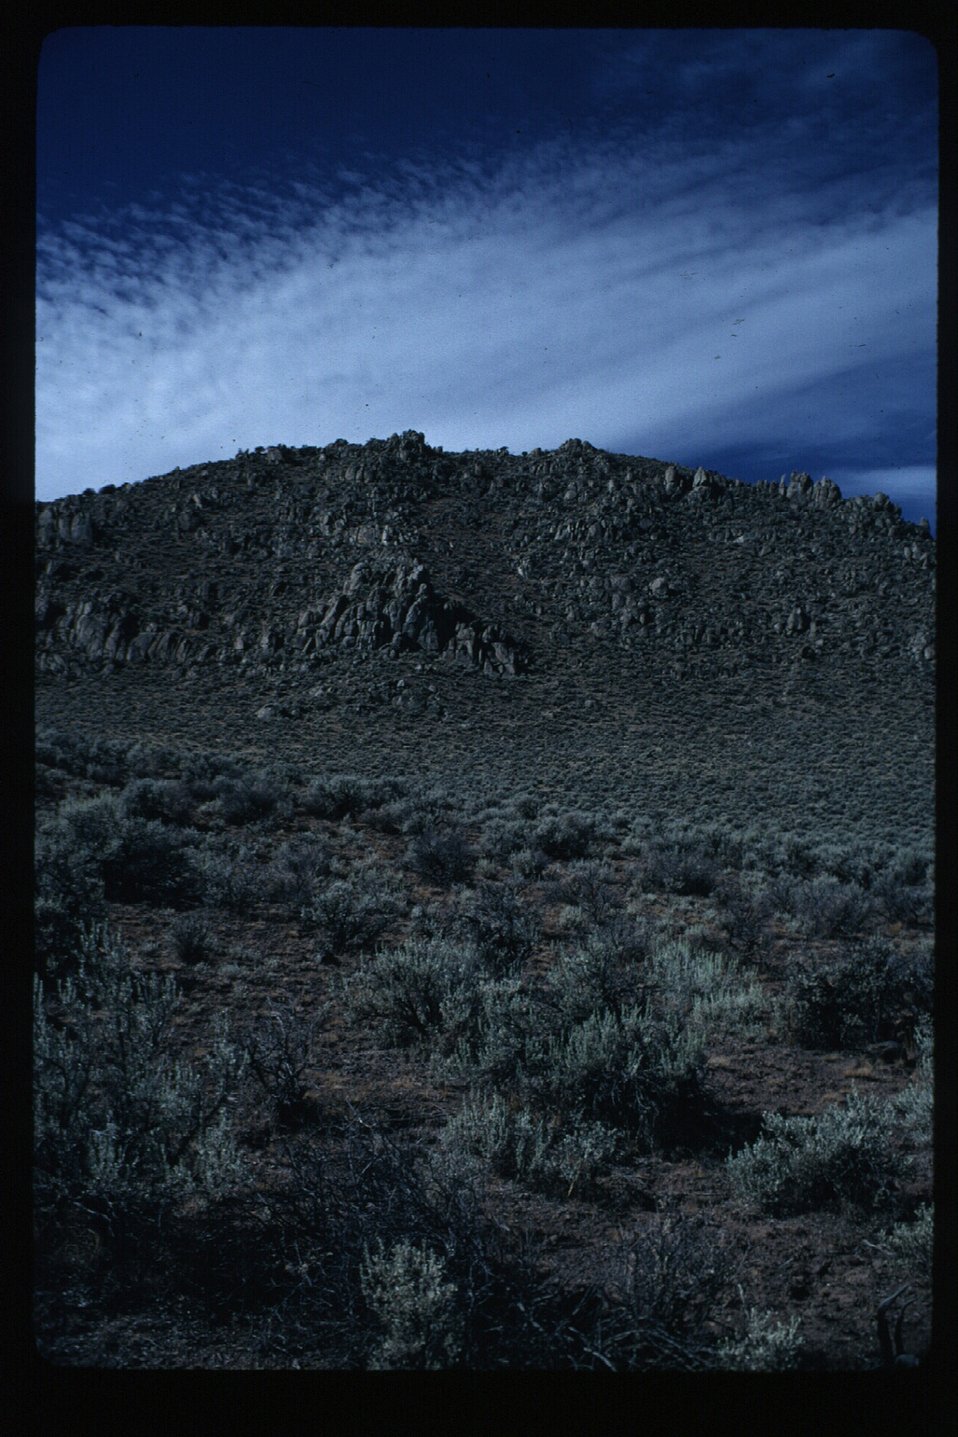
Wild horse roundup Wild Horse and Burro Adoption Program LSRD Lower Snake River District